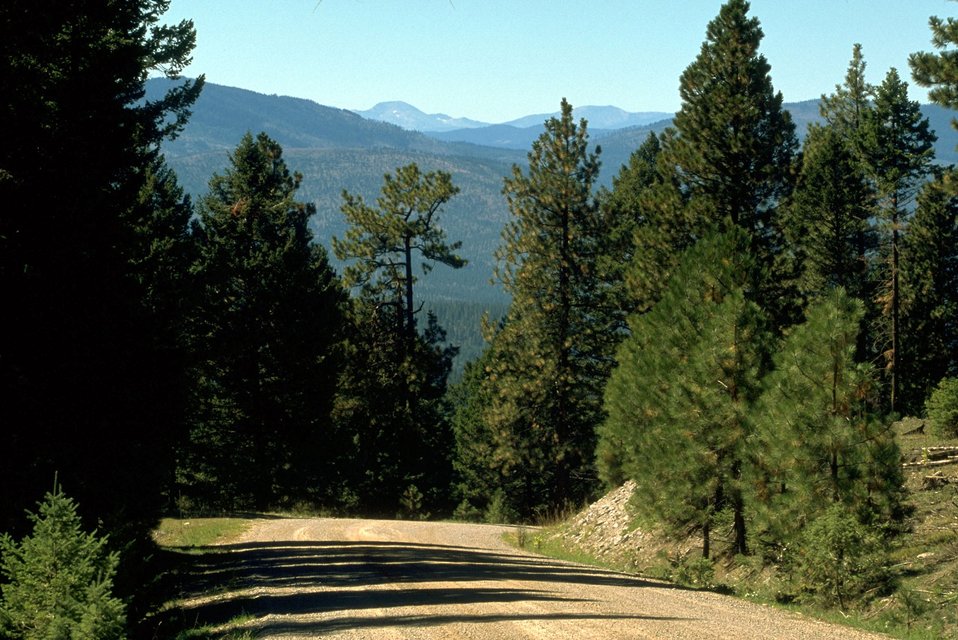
Garnet Back Country Byway